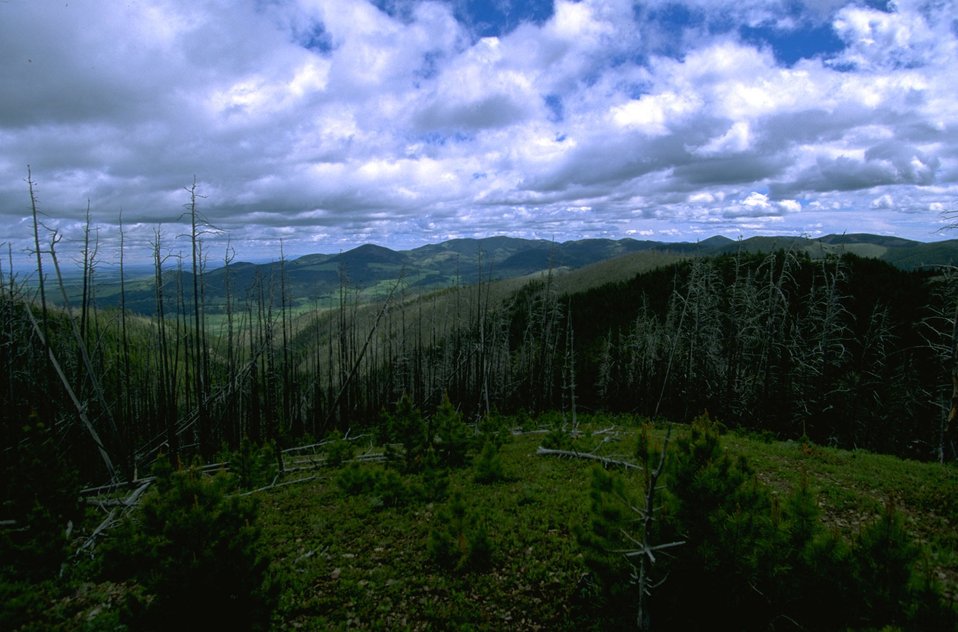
View in the Judith Mountains